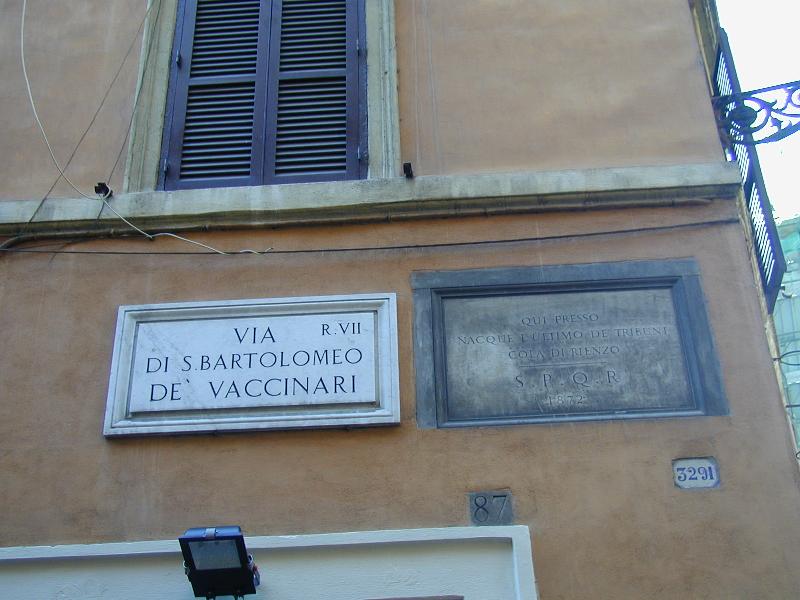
010101 11 qui nacque cola